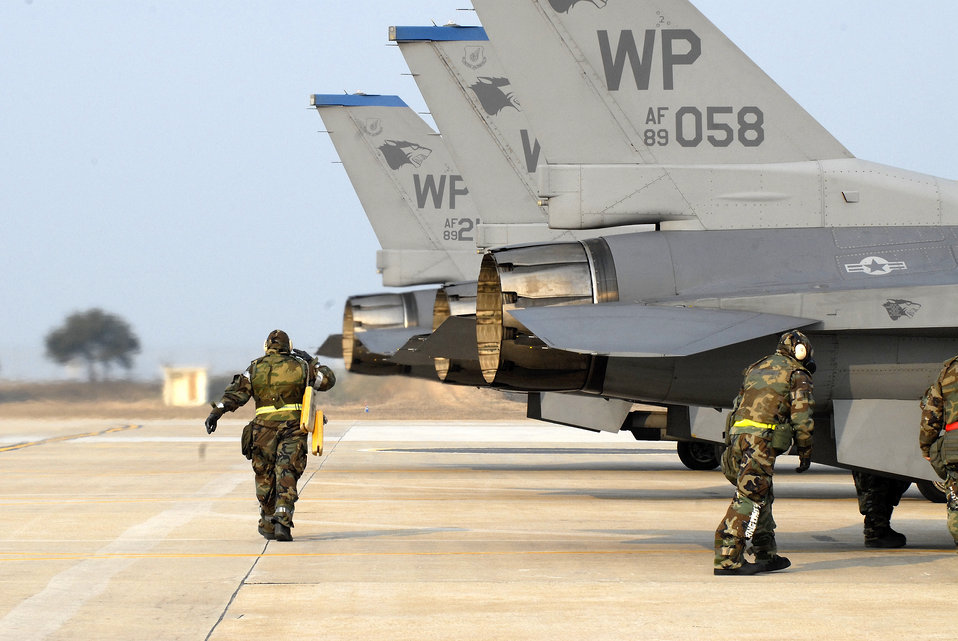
Kunsan F-16 Fighting Falcons

F-16 Fighting Falcons from Kunsan Air Base, Republic of Korea, like those shown here, departed recently for Eielson Air Force Base, Alaska, to participate in Red Flag-Alaska.